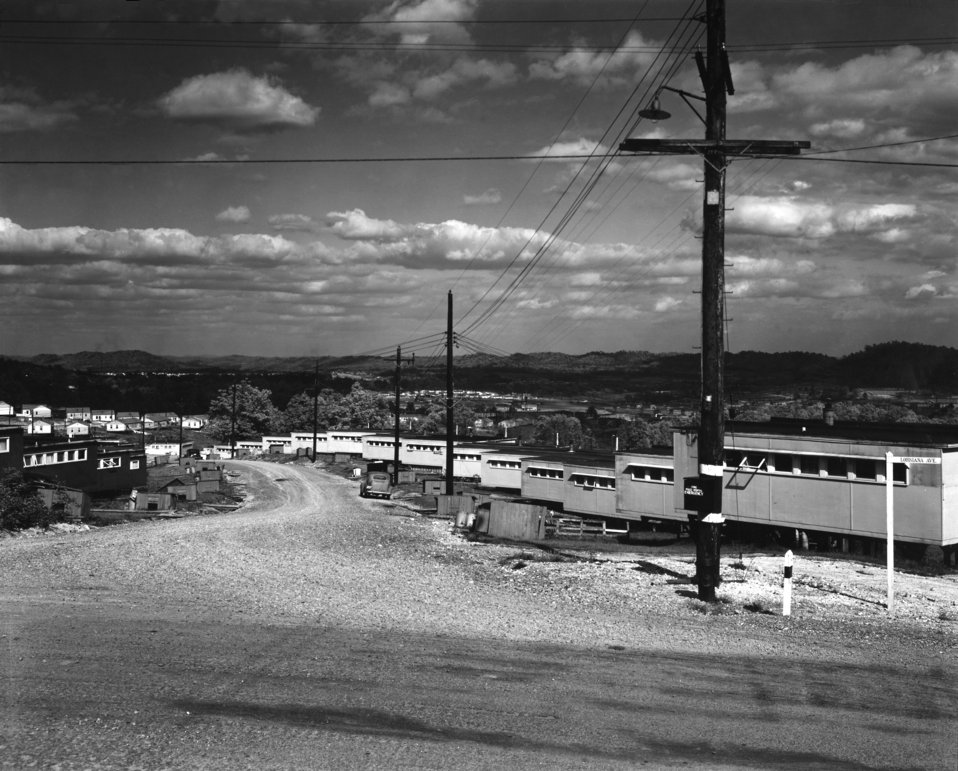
Louisiana Ave. Oak Ridge

MED 48 DOE photo by Ed Westcott 1945
Oak Ridge Tennessee